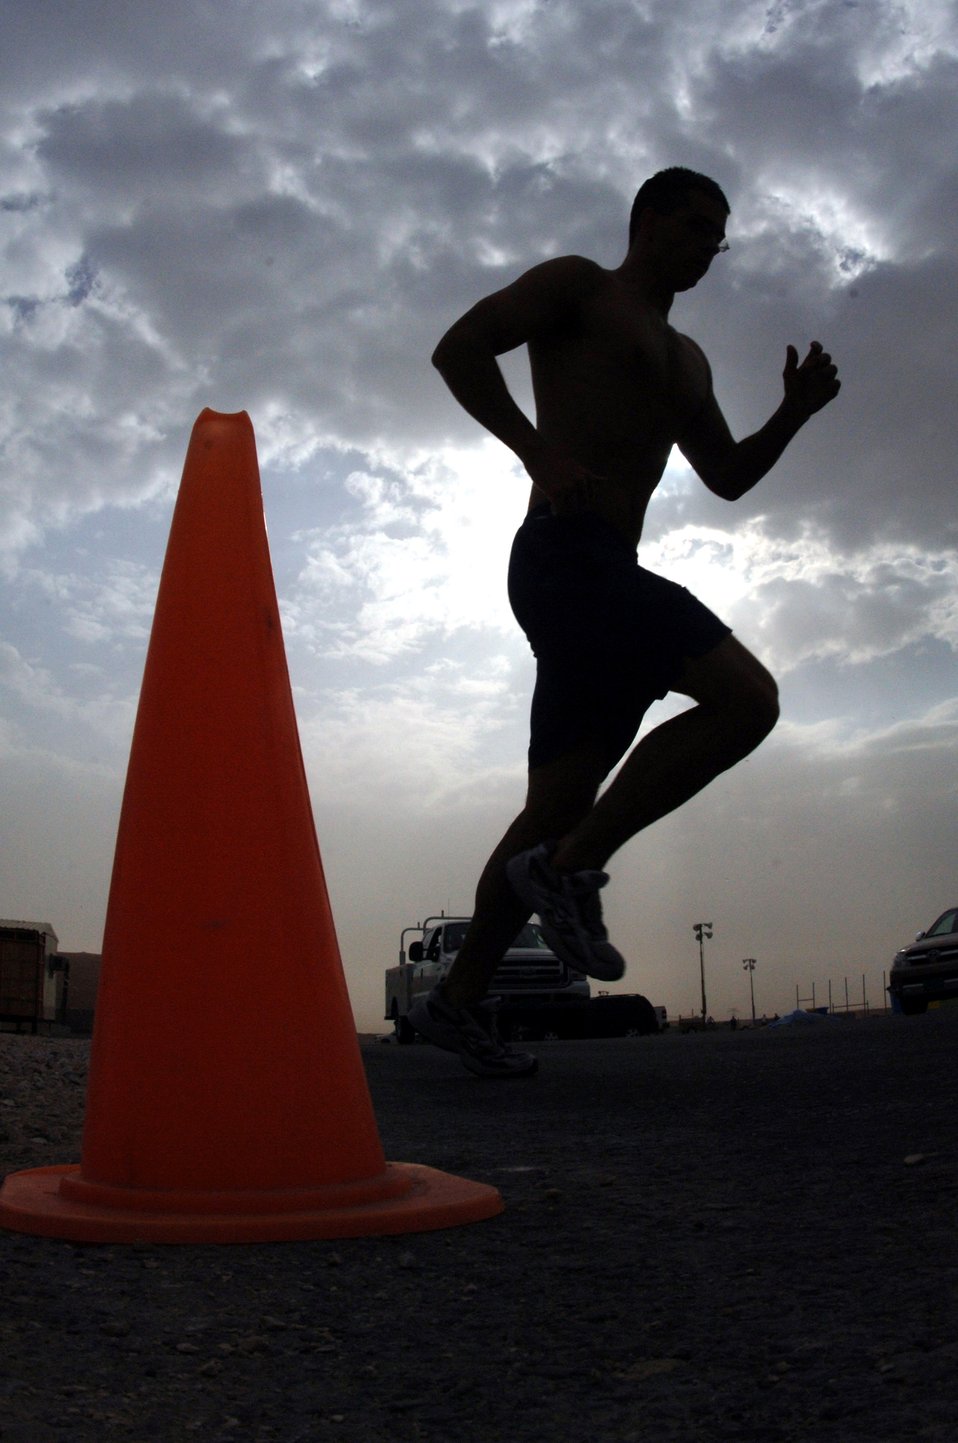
Wing sports day

An Airman is silhouetted as he runs in the biathlon portion of the 379th Air Expeditionary Wing Sports Day on Sunday, April 23, 2006. The biathlon consisted of a 1,600-meter swim and 5-kilometer run. Other events at the deployed location in Southwest Asia included volleyball, a home run derby, basketball, dodgeball and a